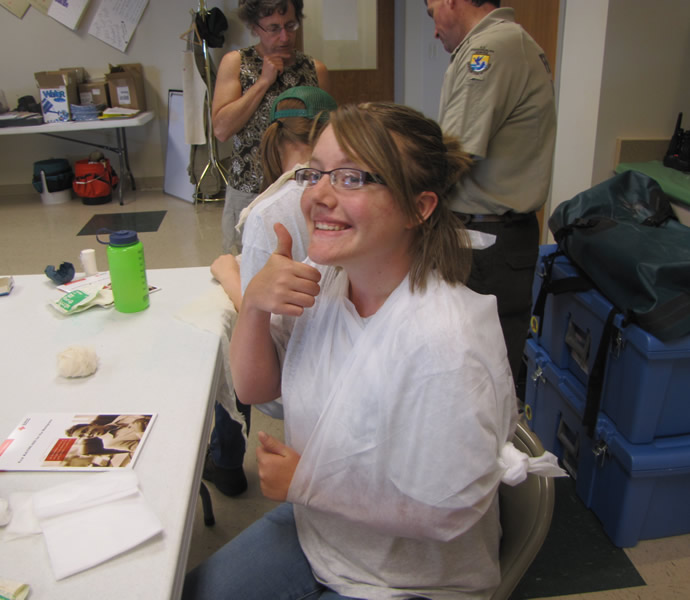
Youth Conservation Corps Learning First Aid

Youth Conservation Corps (YCC) participant learns how to wrap a sling as they take a day to learn safety practices. The day gave the YCC crew an idea of their work environment and possible hazards they may encounter.